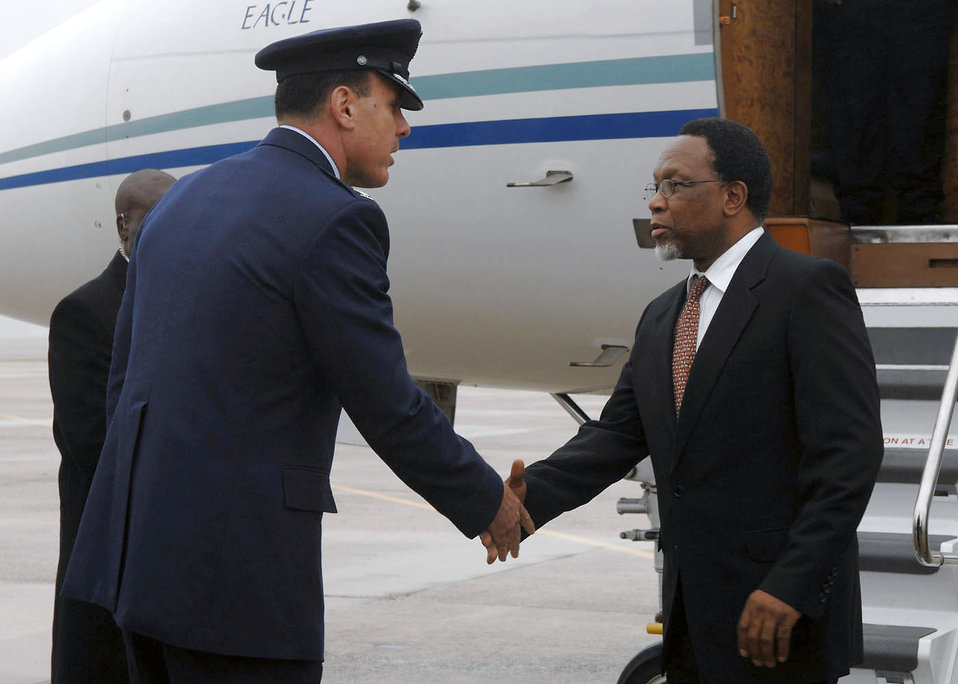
Andrews officials support G-20 Summit

Col. Steven M. Shepro greets South African President Kgalema Motlanthe Nov. 14 at Andrews Air Force Base, Md. The South African president was in town for the two-day G-20 Summit at the White House in Washington, D.C. The summit, hosted by President George W. Bush, brought together world leaders to discuss the increasing global financial crisis, its causes and efforts to resolve it. Colonel Shepro is the 316th Wing commander.